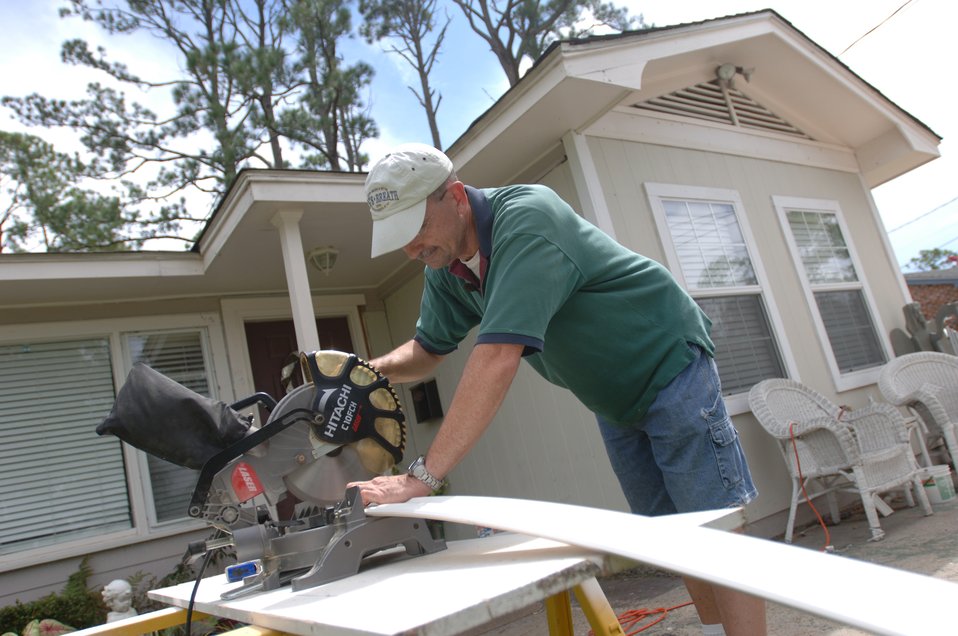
Hurricane hunter deals with aftermath of Katrina

Master Sgt. Daniel Peters prepares a crown moulding for his house in Biloxi. MSgt Peters is one of several Air Force members whose house was severely water damaged from Hurricane Katrina. MSgt Peters of the 403rd Airlift Squadron on Keesler AFB, MS has been coming home everyday for the last year to repair his house.